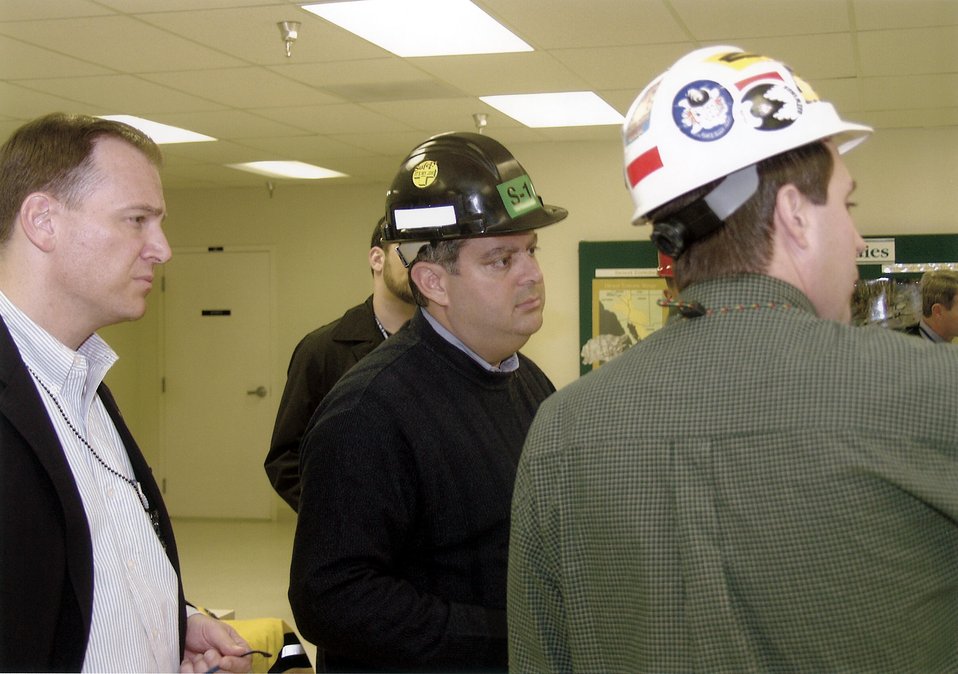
SECRETARY ABRAHAM GETS BRIEFING INSIDE THE CHANGE HOUSE, NORTH PAD OF EXPLORATORY STUDIES FACILITY (ESF).

YUCCA MOUNTAIN, ON THE SOUTHWEST BOUNDARY OF THE NEVADA TEST SITE, IS BEING EVALUATED FOR SUITABILITY AS THE NATION'S FIRST REPOSITORY FOR HIGH LEVEL NUCLEAR WASTE. STUDIES INCLUDE SURFACE BASED TESTING OF ROCK, SOIL SAMPLES AND WATER MOVEMENT, SUBSURFACE ROCK TESTING AT DEEP LEVELS AND LABORATORY ANALYSIS OF SAMPLES. CURRENTLY NUCLEAR WASTE IS STORED IN TEMPORARY SURFACE STORAGE FACILITIES IN 39 STATES.